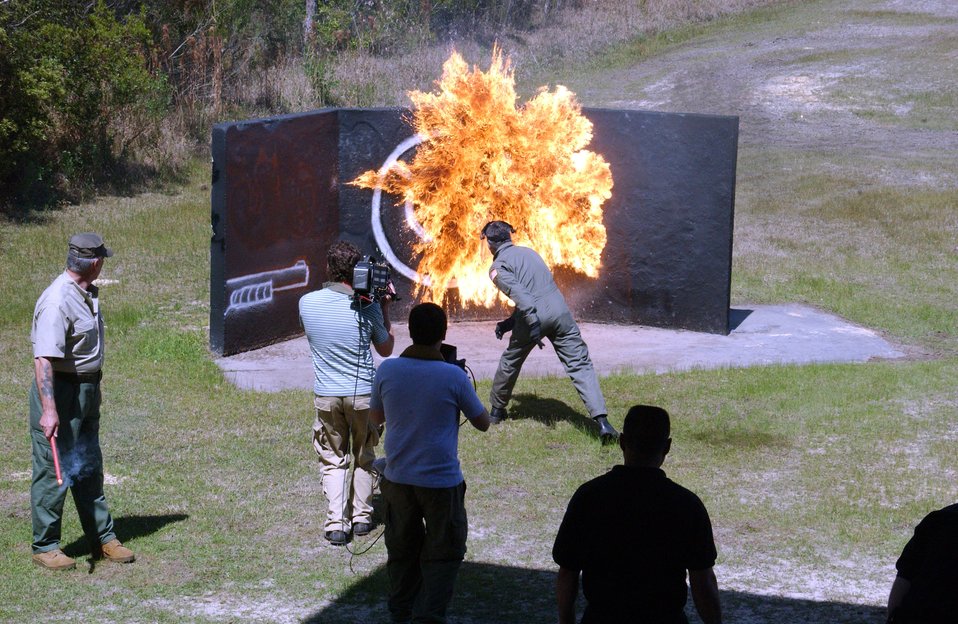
'Mail Call' host visits Hurlburt Field

R. Lee Ermey, host of the